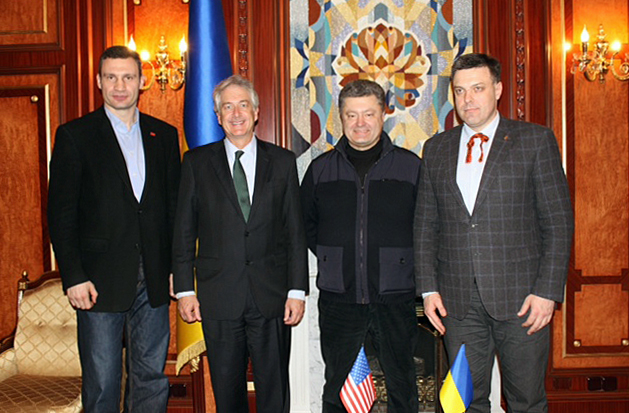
Deputy Secretary Burns Meets With Key Ukrainian Political Leaders

Deputy Secretary of State Bill Burns meets with key political leaders in Kyiv, Ukraine, on February 25, 2014.